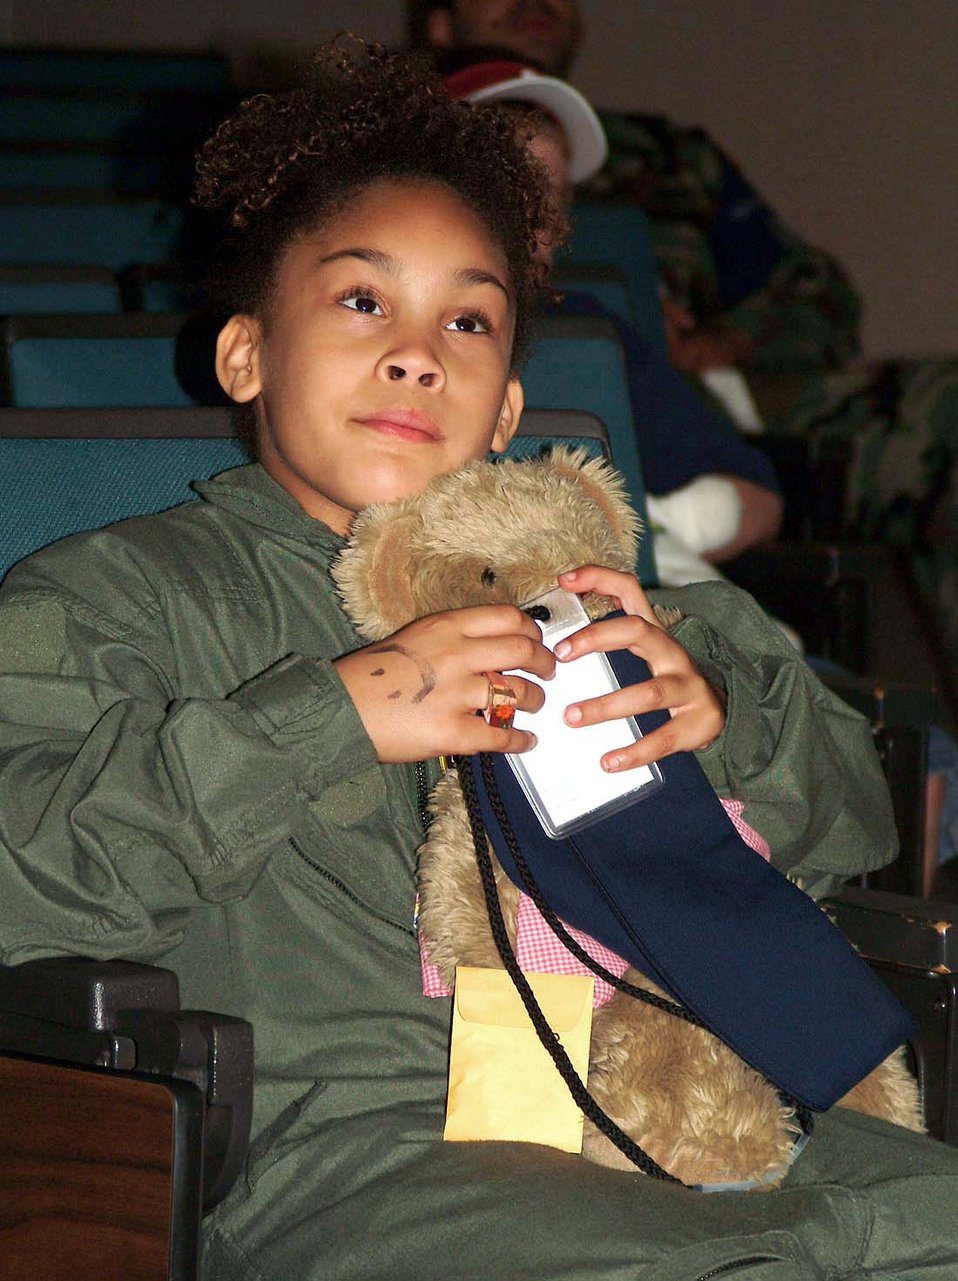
My wingman teddy

TINKER AIR FORCE BASE, Okla. -- Taylor Farve holds her teddy bear as she listens to a briefing before processing through the deployment line. She is the daughter of Staff Sgt. Lawrence Farve from the 963rd Airborne Air Control Squadron, and Staff Sgt. Carnita Farve from the 72nd Air Base Wing here. Taylor and other children of airmen assigned here participated in Operation KUDOS, designed to help